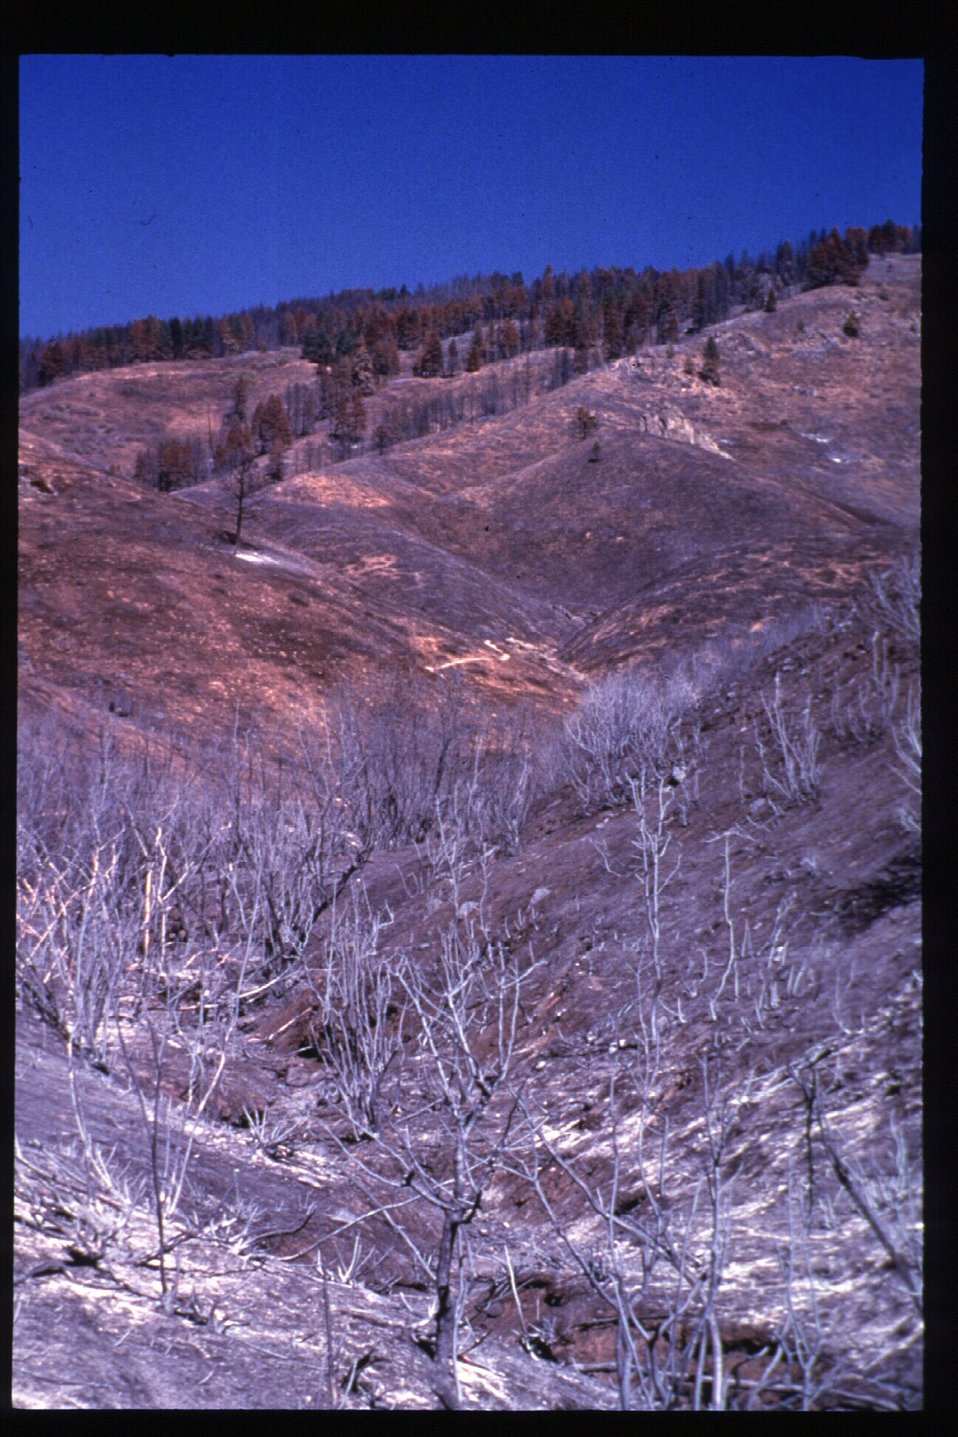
8th Street Fire Boise Front Foothills Four Rivers Field Office LSRD Lower Snake River District